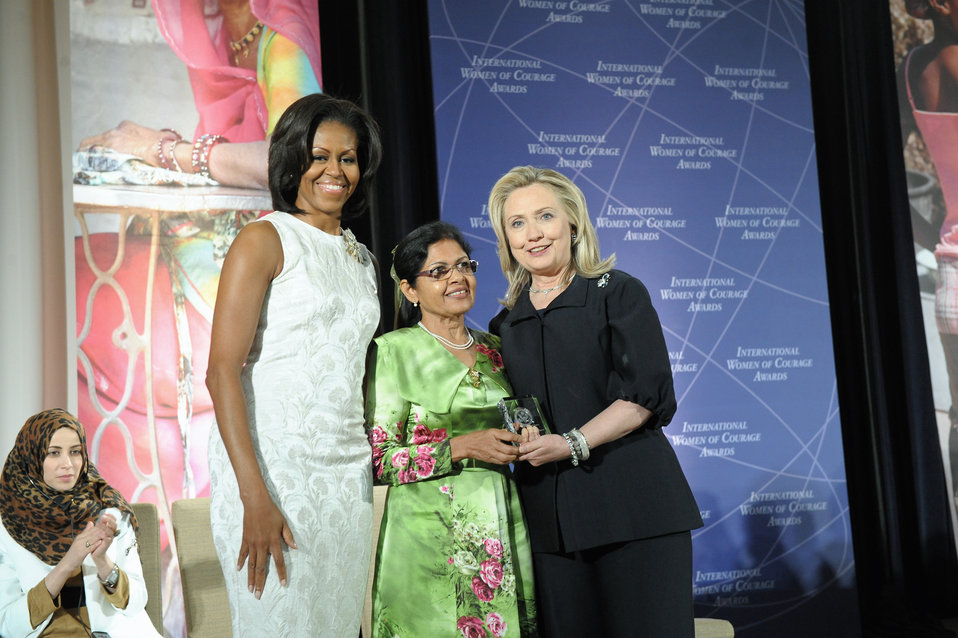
Secretary Clinton and First Lady Obama With 2012 IWOC Award Winner Aneesa Ahmed of Maldives

U.S. Secretary of State Hillary Rodham Clinton, right; and First Lady Michelle Obama, left; pose for a photo with 2012 International Women of Courage (IWOC) Award Winner Aneesa Ahmed of Maldives, at the U.S. Department of State in Washington, D.C., on March 8, 2012.